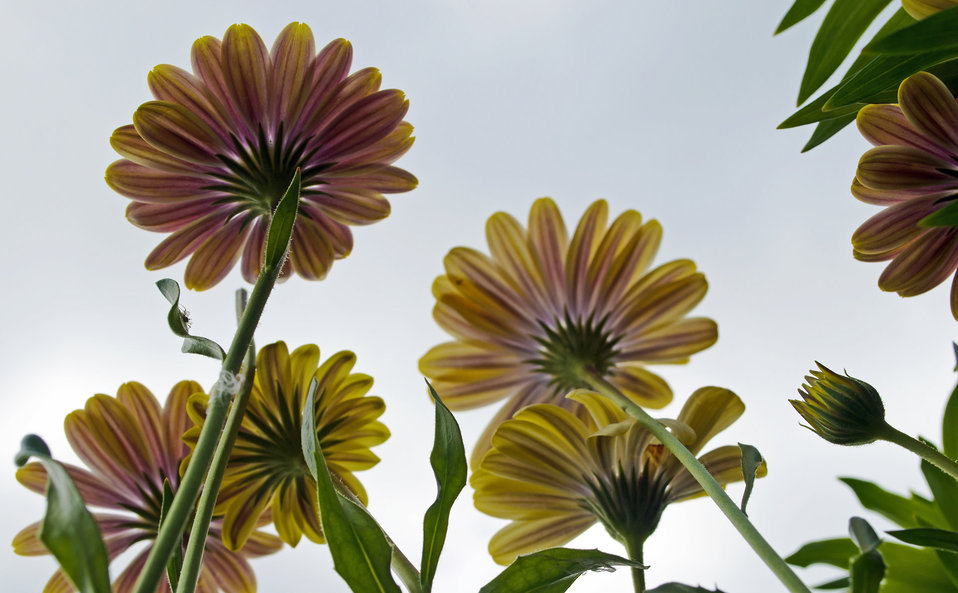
Nice flowers.